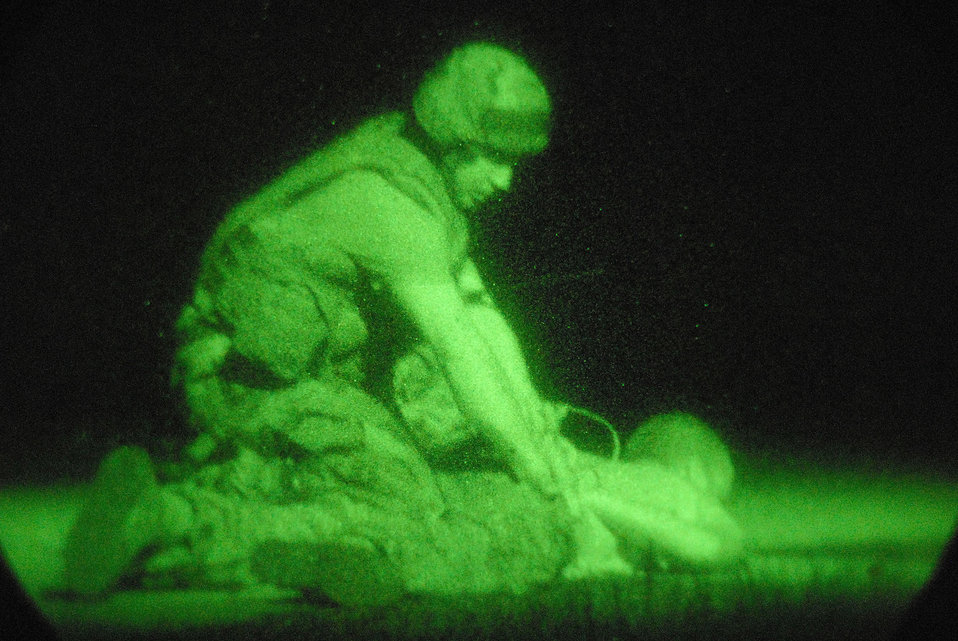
BEVERLY BULLDOG

Senior Airman Robert Spears apprehends a suspicious person during a peninsula wide operational readiness exercise July 22 at Kunsan Air Base, South Korea. The base members are participating in the PENORE to evaluate readiness and ability of base members to conduct their wartime mission. Sergeant Spears 8th Security Forces Squadron